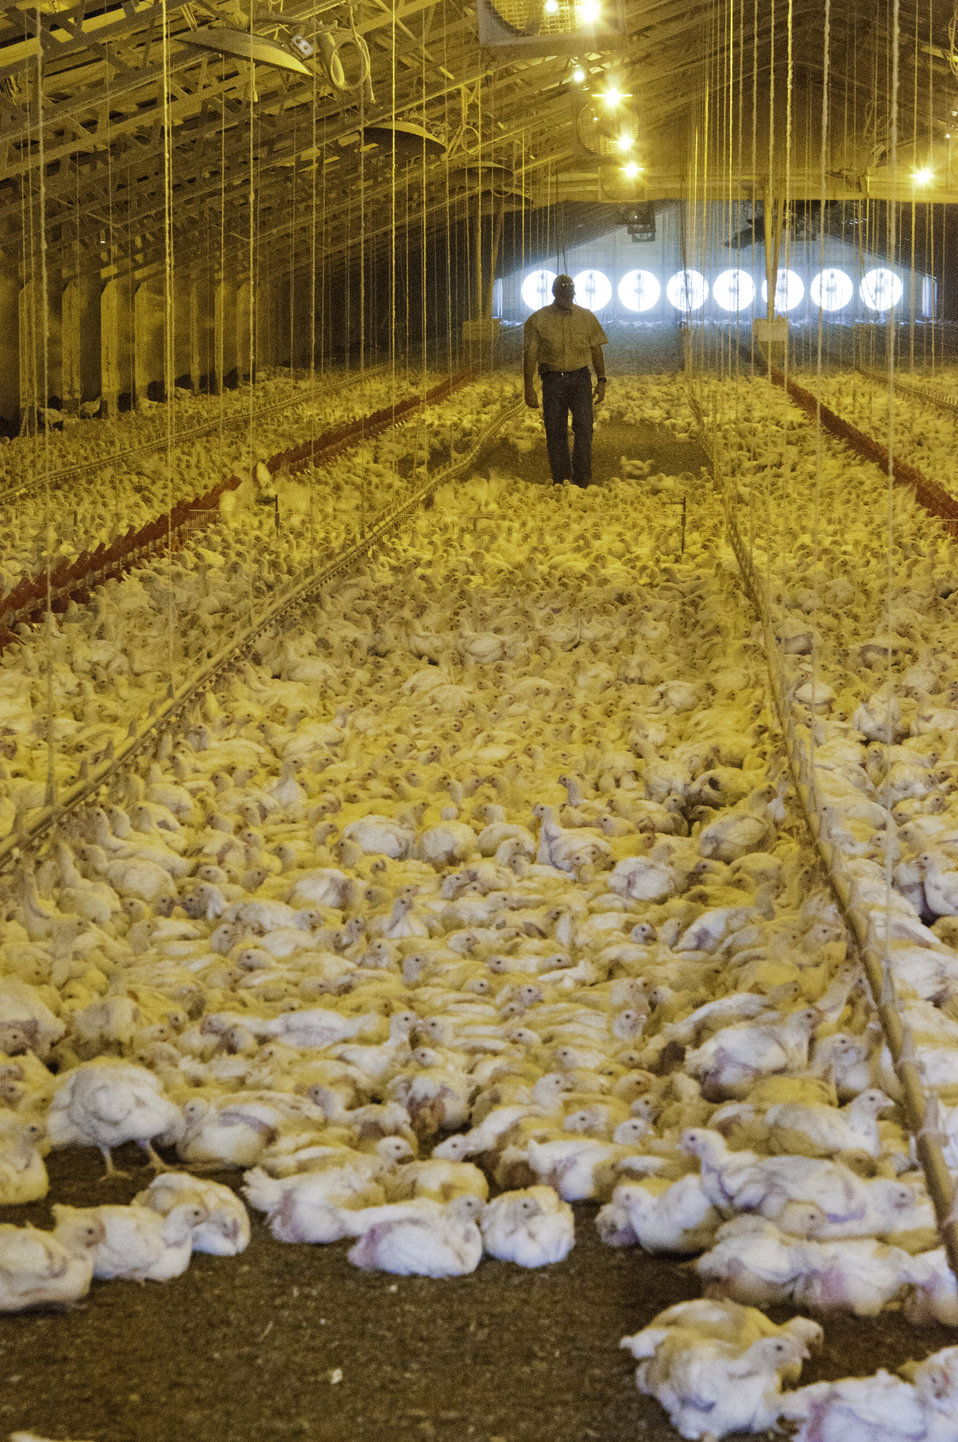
Bobby Morgan checks on broiler hens in one of his chicken houses in Luling, TX on Aug. 23, 2013.